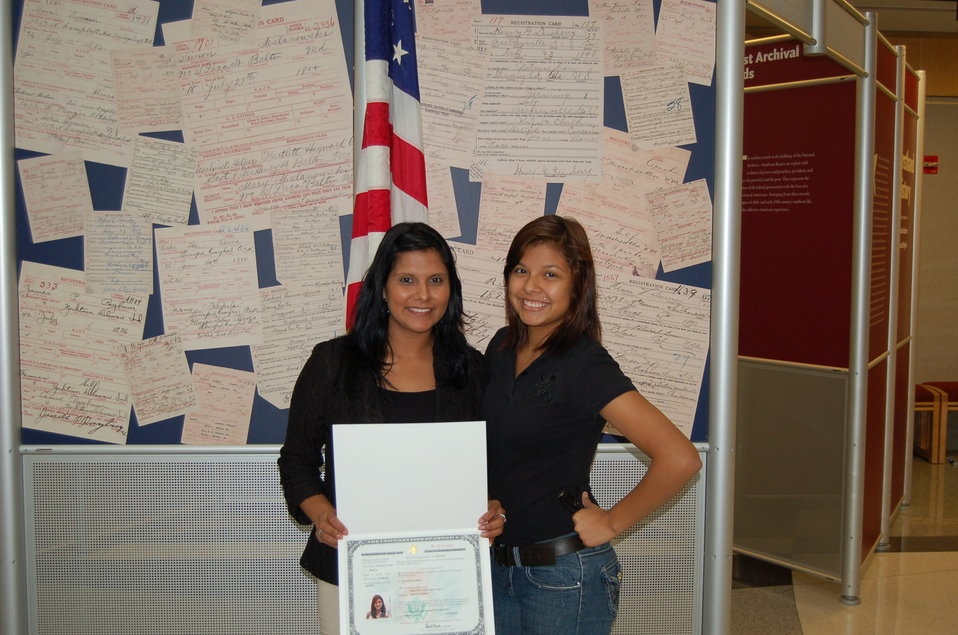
New Citizens